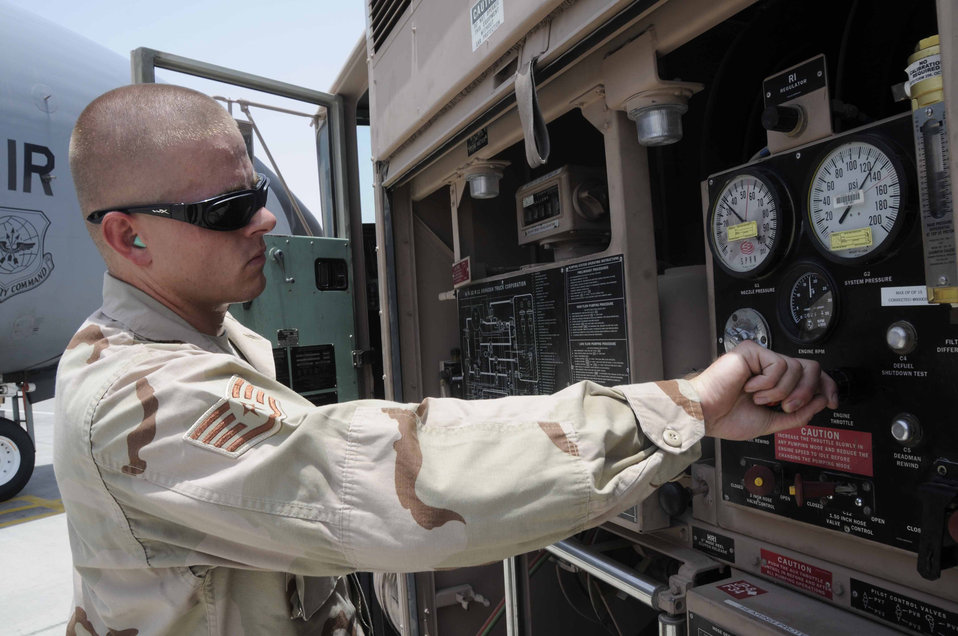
Airmen improve processes to increase efficiency

Staff Sgt. Marcus Ortman monitors the differential pressure meter July 24 at a Southwest Asian air base. Sergeant Ortman is assigned to the 379th Expeditionary Logistics Readiness Squadron and deployed from McChord Air Force Base, Wash.